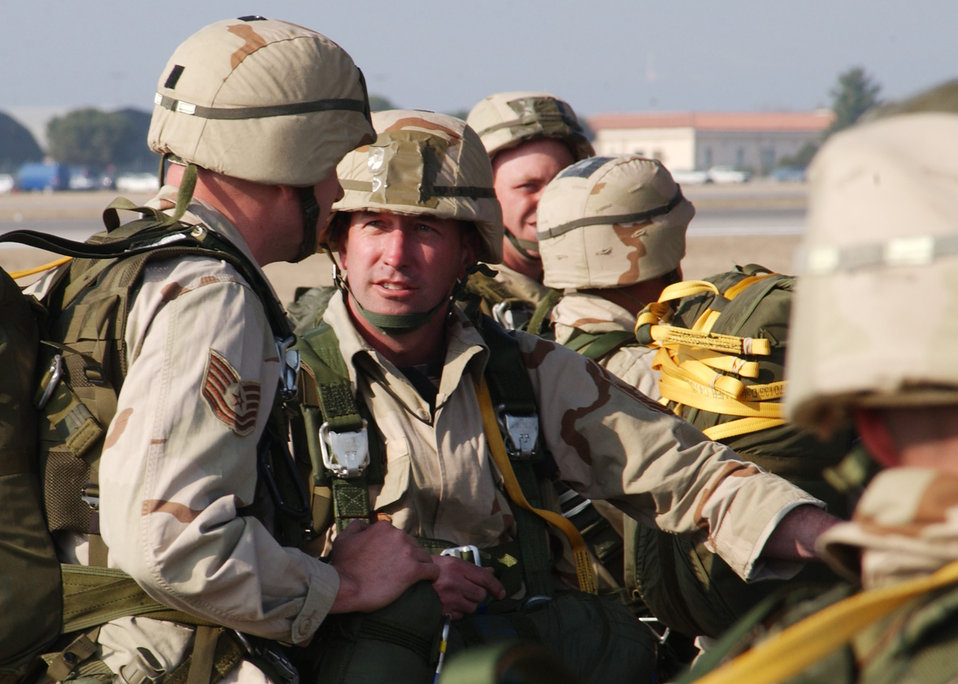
Jump plans

OPERATION IRAQI FREEDOM -- At a staging base in Europe, Tech. Sgt. Bobby Hoyt (left) and Master Sgt. Bill Maus discuss jump procedures March 27 before boarding a C-17 Globemaster III. Hoyt and Maus were part of an joint force that seized and set up an air base in northern Iraq as part of Operation Iraqi Freedom.